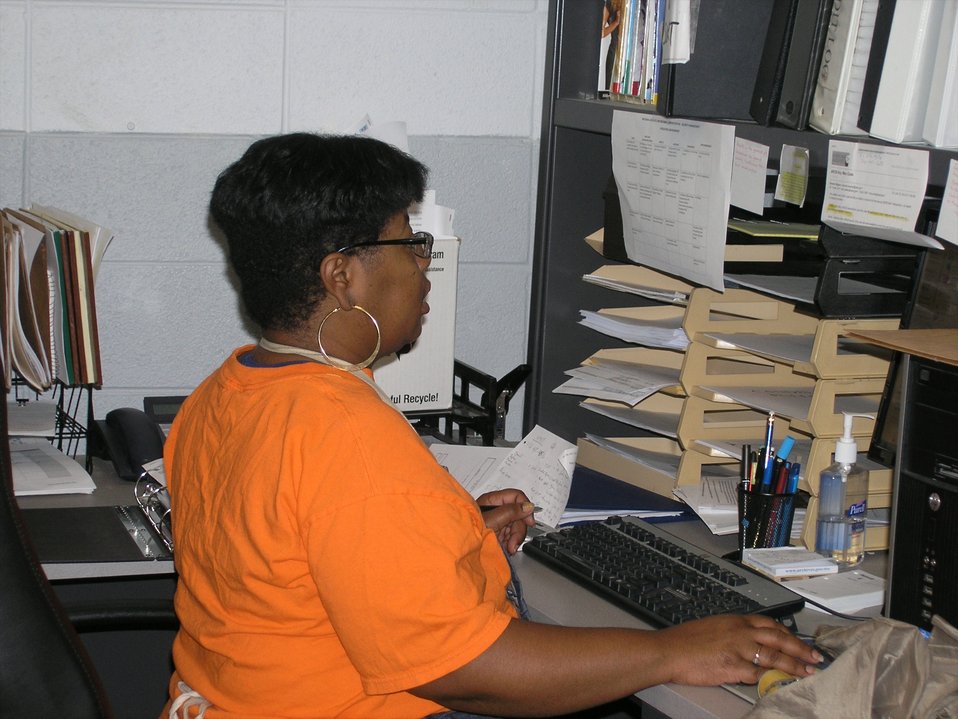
Rita Brown working at her station in the processing area; Location: Chicago Federal Records Center, Chicago, IL